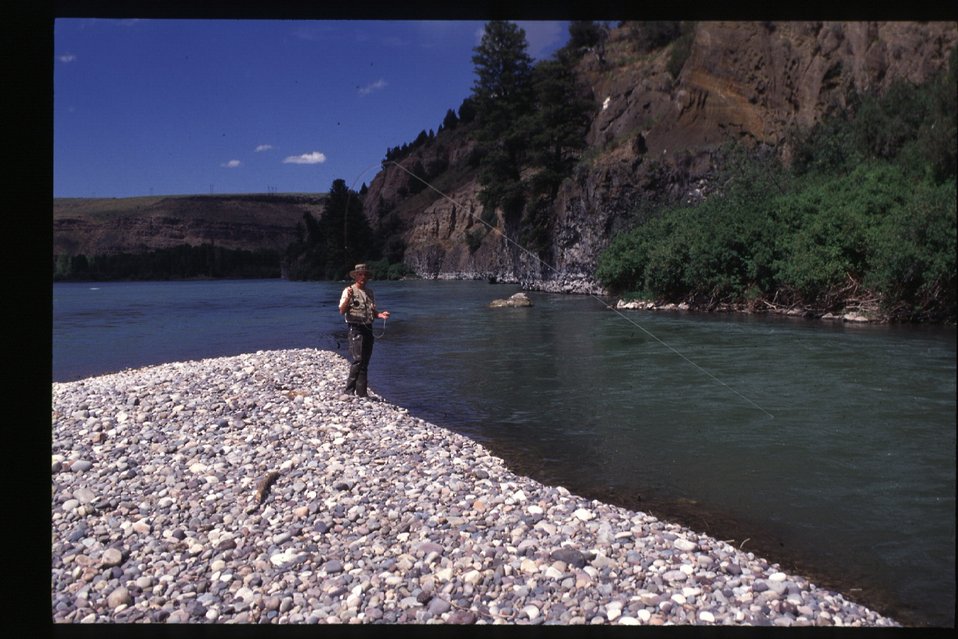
Fly fishing South Fork of Snake River Idaho Falls Field Office USRD Upper Snake River District